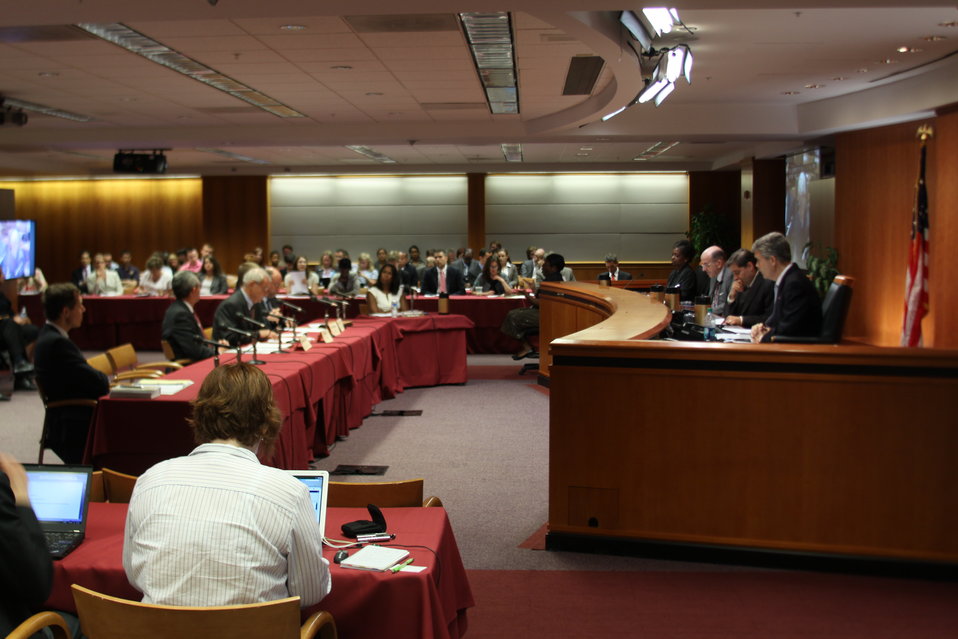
7/12/2011 Open Commission Meeting

July 2011 Open Commission Meeting on Low Power Radio Service, Cramming, and Wireless E911 Location Information